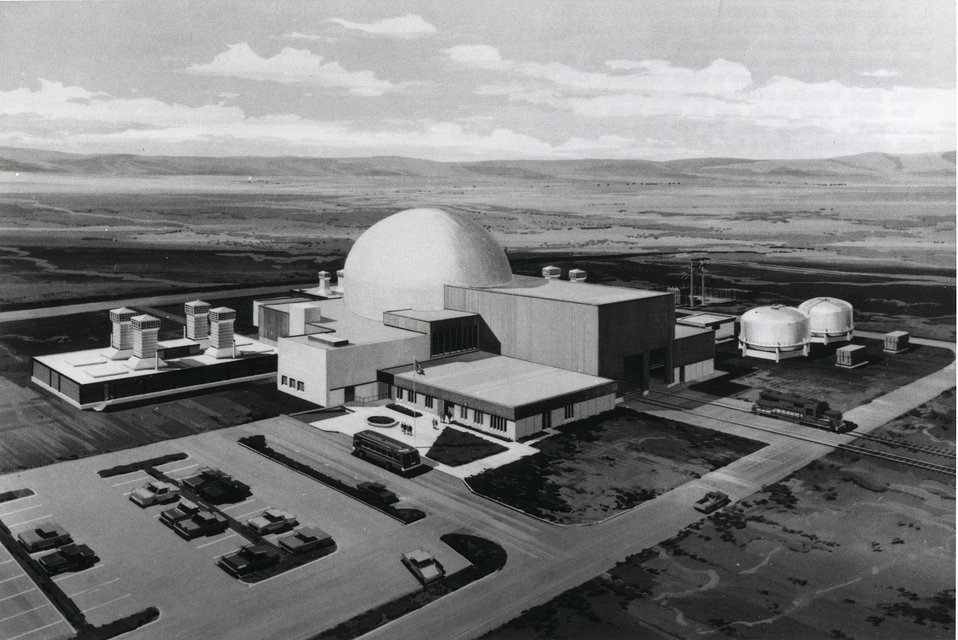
The U.S. Atomic Energy Commission's Fast Flux Test Facility (FFTF) is currently under construction at the Hanford Site near Richland, Washington. c. 1970.